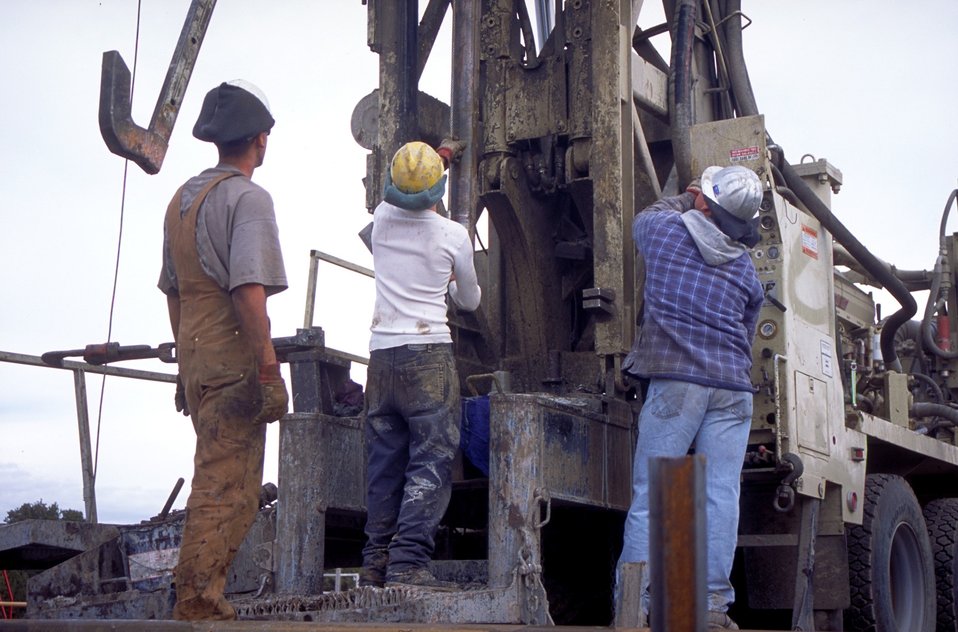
Drilling for coal bed methane near Price, Utah.